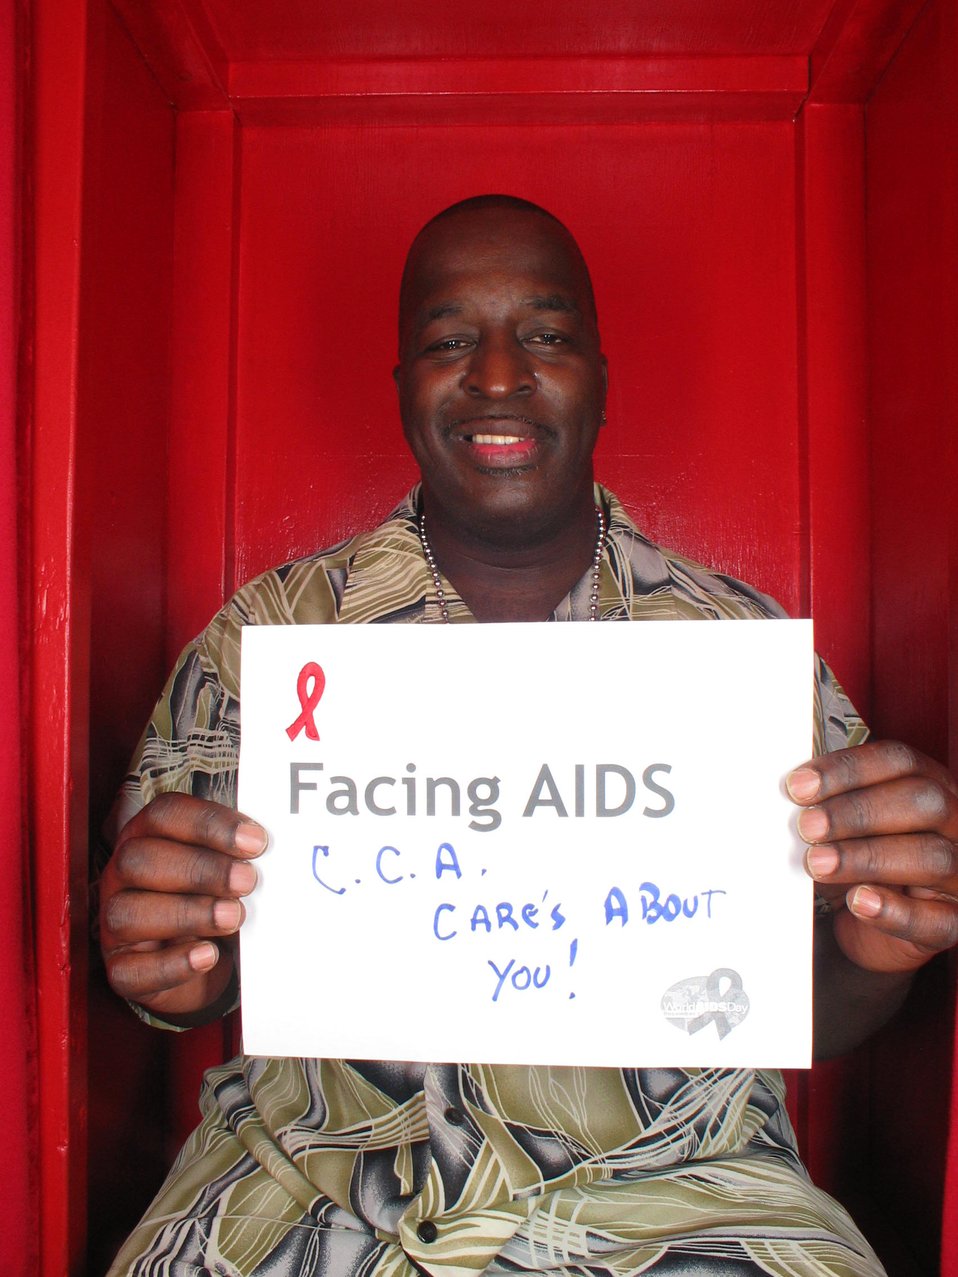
Facing AIDS C.C.A care's about you!